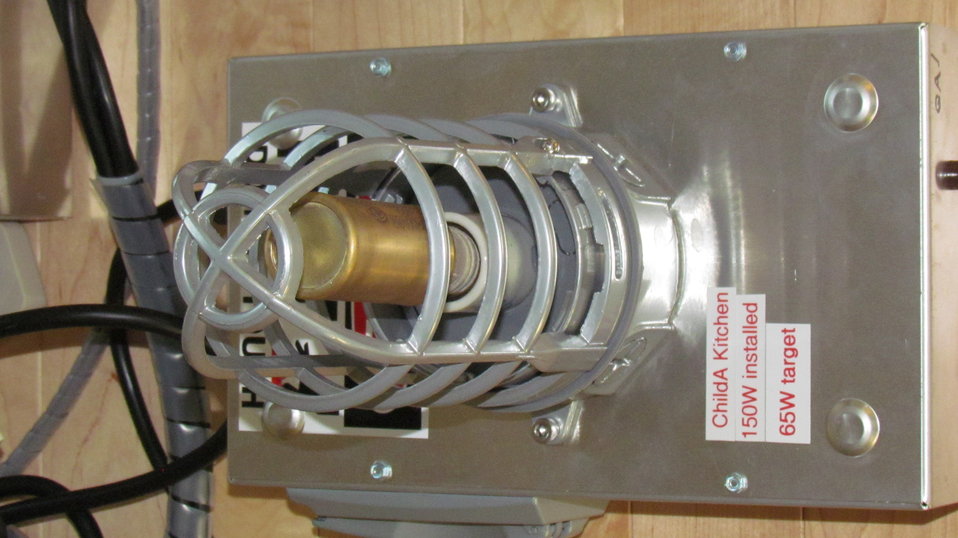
Close up of heater used to simulate sensible heat of child.